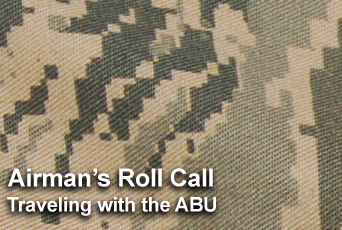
Airman's Roll Call: Airmen can now travel in utility uniforms

This week's Airman's Roll Call focuses on Airmen traveling while wearing their utility uniforms. Air Force officials recently authorized wear of the airman battle uniform, battle dress uniform and desert camouflage uniform for commercial travel in an official capacity throughout the continental United States.